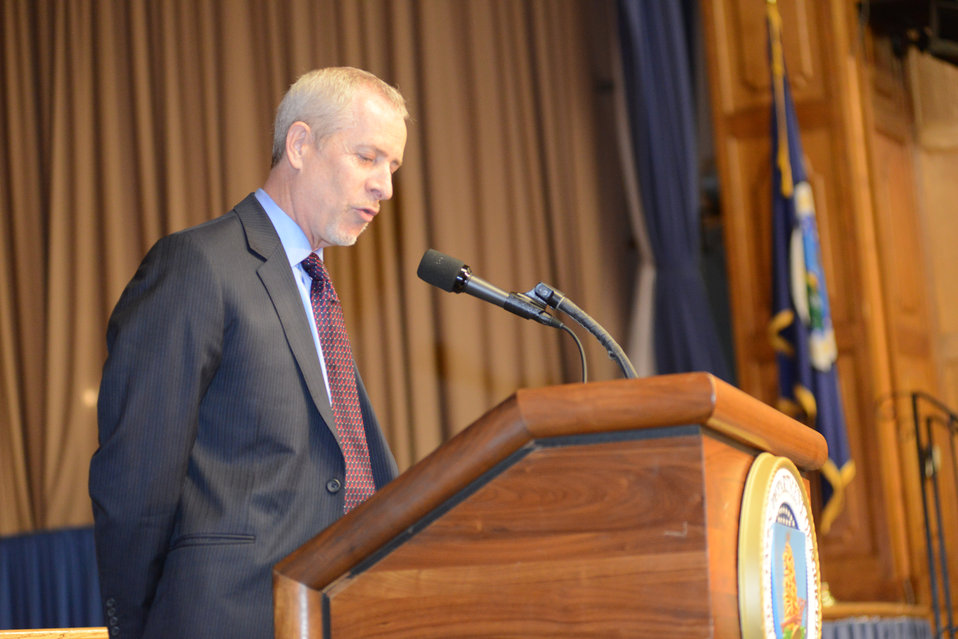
U.S. Department of Agriculture (USDA) National Institute of Food and Agriculture (NIFA) Brent Elrod introduces keynote speaker Celebrity Chef Art Smith at the 2014 Lesbian/Gay/Bisexual/Transgender (LGBT) Pride Observance event held in the Jefferson Auditorium at USDA in Washington, D.C. on Thursday, Jun. 5, 2014.